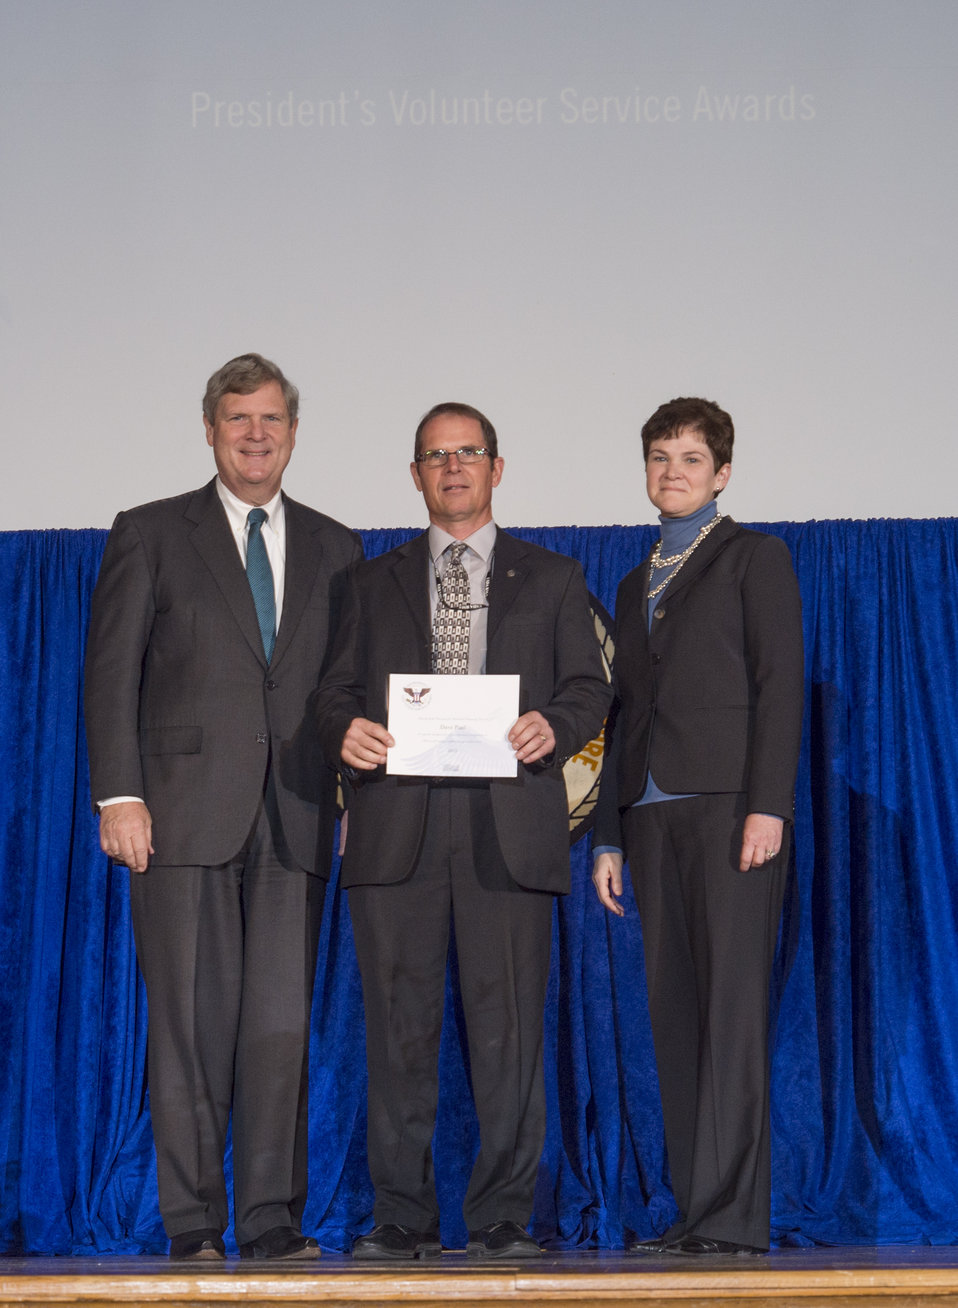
Agriculture Secretary Tom Vilsack and Agriculture Deputy Secretary Krysta Harden present the President’s Gold Volunteer Service Award to Dave Paul at the 2013 Secretary's Honor Awards in the Jefferson Auditorium at the U.S. Department of Agriculture (USDA) in Washington, D.C. on Wednesday, Dec. 11, 2013. The President’s Gold Volunteer Service Award is given to an employee that has served 500 hours or more of service with a qualifying organization over the 12-month period beginning July 1, 2010, and ending June 30, 2011.